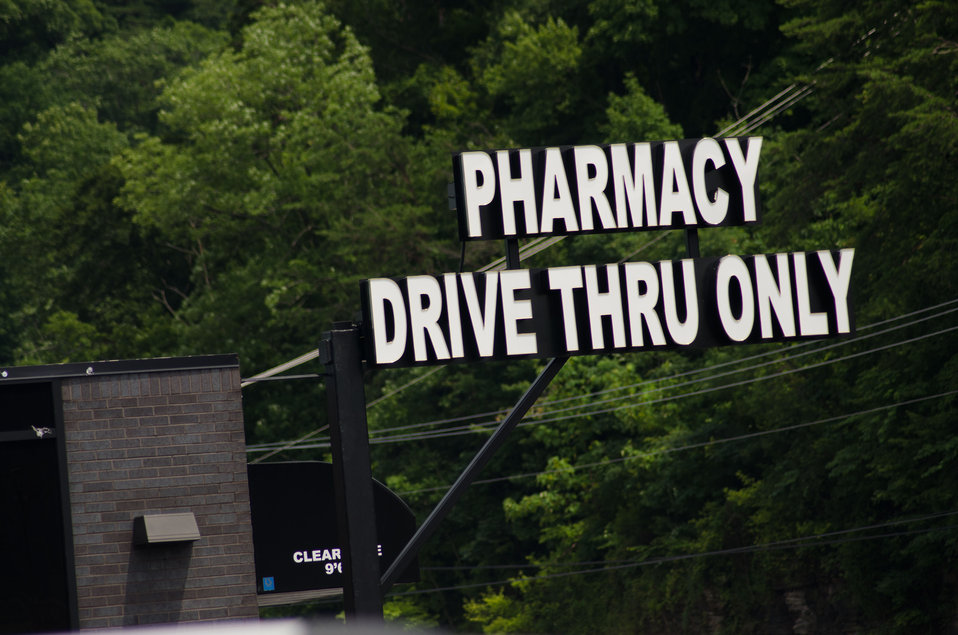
Re-utilized buildings at various ends of multiple parking lots are common sights at the Pikeville Medical Center on Tuesday, July 12, 2011, in Pikeville, KY. Nearby, the above ground construction phase of Pikeville Medical Center (PMC) expansion project, on Tuesday, July 12, 2011, in Pikeville, KY. After months of infrastructure construction and rain delays, one of Kentucky’s largest American Recovery and Reinvestment Act (ARRA) projects is under way. The $44.6 million Community Facilities Loan will finance construction of a new medical office building and parking garage. The new medical office building will house outpatient surgery, endoscopy, surgical support and provide exam, waiting and office space for 23 primary and specialty care physicians. It also will contain a medical research center to support existing research – in conjunction with Pikeville College – on health disparities, genetic research related to the prevalence of cancer and other areas, including drug and treatment trials. The new parking garage with more than 1,000 spaces will be built adjacent to the new medical building, eliminating the need to shuttle patients back and forth from remote parking areas. The new garage will provide closer and easier proximity to medical and hospital services for all patients.
Wayne Rutherford, County Judge-Executive for Pike County, says funding from ARRA is a boon for his county because it will create jobs.

“This is great for Pike County’s economy. We know we have a great hospital, and with this support, it will be even better,” said Rutherford. “The unemployment rate here is above the state average and this will stimulate jobs. There will be construction, which means lots of jobs on the front end – and even more once it is built.”

Pike County is one of Kentucky’s persistent poverty counties and the current medical facility provides health care services for a rural population of more than 68,000. This project will create 1,430 direct and indirect construction jobs, in addition to 97 long-term jobs. It is scheduled to be completed in December 2012.

“This project is a prime example of the ARRA monies being utilized for much-needed health care facility expansion in an economically-depressed region of Eastern Kentucky and Appalachia,” said Tom Fern, State Director for Rural Development in Kentucky. “This hospital has received national recognition for its quality of care, and this money will allow them to expand and build upon their success and continue providing quality health care services to the region.”

PMC was named National Hospital of the Year by the American Alliance of Healthcare Providers in November 2009. The hospital was among 400 elite health care facilities to apply for this prestigious honor. To earn this recognition, PMC competed against more than 400 hospitals, including the Mayo Clinic, the John Hopkins Hospital, Cedar-Sinai Medical Center, the Cleveland Clinic, Duke University Medical Center and Vanderbilt University.

Pikeville City Manager Donovan Blackburn said the medical center is the largest employer in Pikeville and contributes nearly $2 million to the city through the payment of occupational taxes. He went on to say that Pikeville Medical’s success is also the city’s success because as other cities struggle with dwindling revenues, Pikeville has actually seen growth.

“This is a regional medical center that is very important to the city. Pikeville is a legal, financial and education hub for Eastern Kentucky and a gateway to rural communities in Virginia and West Virginia. There are half a million within a 50-mile radius – so it’s not just local people that depend on this facility,” said Blackburn. “From a regional standpoint it adds volume from a jobs standpoint. Everybody in this county knows someone or has family that works for Pikeville Medical Center.
“People in this area used to have to go out of the area for good jobs and quality medical services, but Pikeville Medical has changed that,” added Blackburn. 'And it has impact on other parts of the city’s economy – hotels, restaurants and retail. It increases the quality of life tenfold.”

The Recovery Act was designed to spend money gradually over time in order to sustain a true recovery – with peak spending to occur early this year. While the experts agree that ARRA is already responsible for creating or saving approximately two million jobs, about 75 percent of recipients that reported on their Recover Act spending indicated their projects are less than half complete, meaning there is even more job impact from those dollars to come.